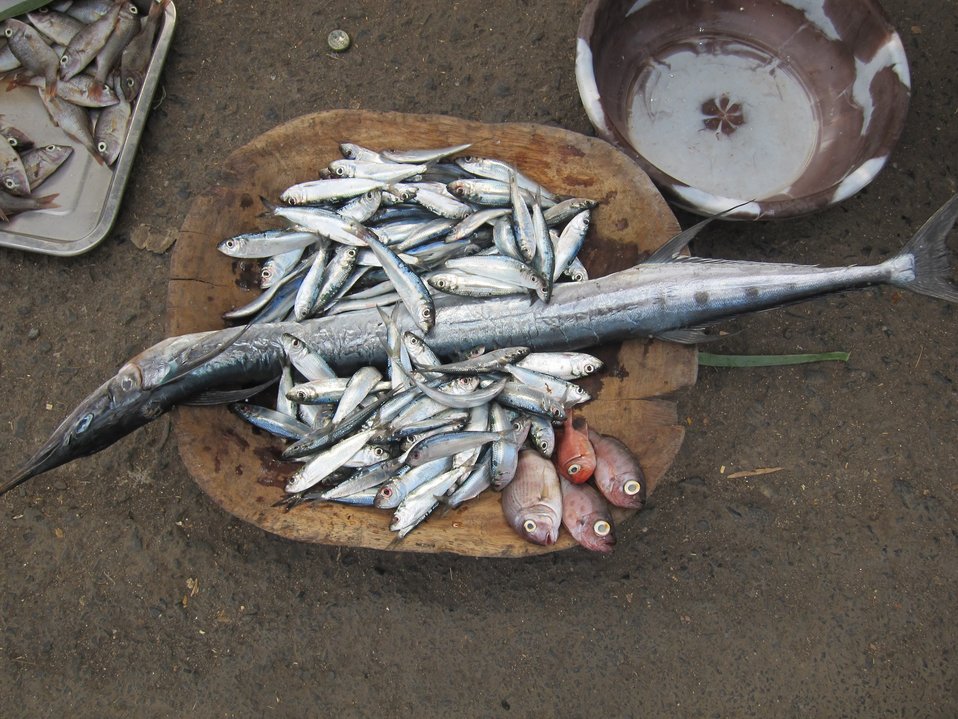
Fish for sale at Sao Tomean street market